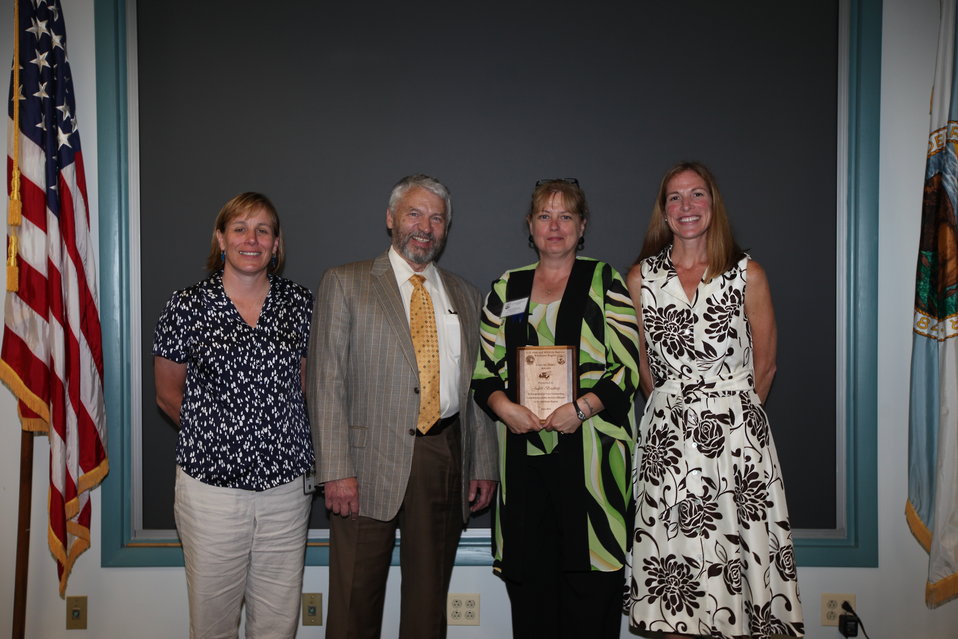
Judith Bradway of Realty and National Wildife Refuge System was awarded a Region 5 Unsung Hero Award.
From left to right: Deputy Regional Director Deb Rocque, Deputy Director Rowan Gould, Judith Bradway, and Regional Director Wendi Weber